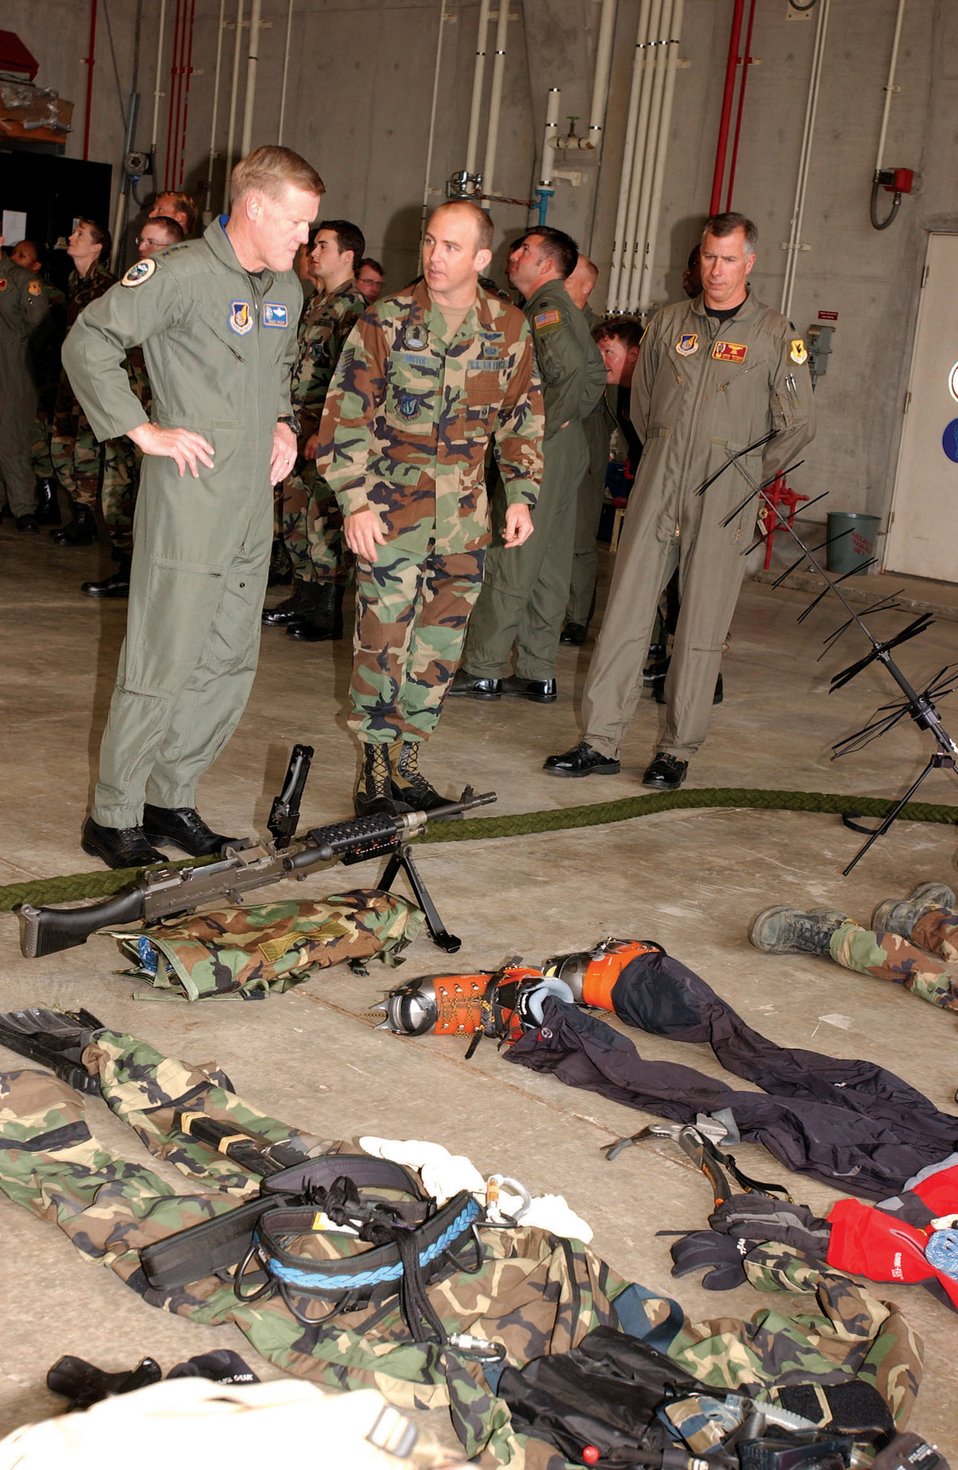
18th Wing key component in war on terrorism

Lt. Gen. Bruce Wright discusses equipment used by rescue members from Kadena Air Base, Japan, with Tech. Sgt. Derek Docter, 31st Rescue Squadron. The U.S. Forces Japan and 5th Air Force commander toured Kadena AB Nov. 15 to 16 for an in-depth orientation of the 18th Wing.